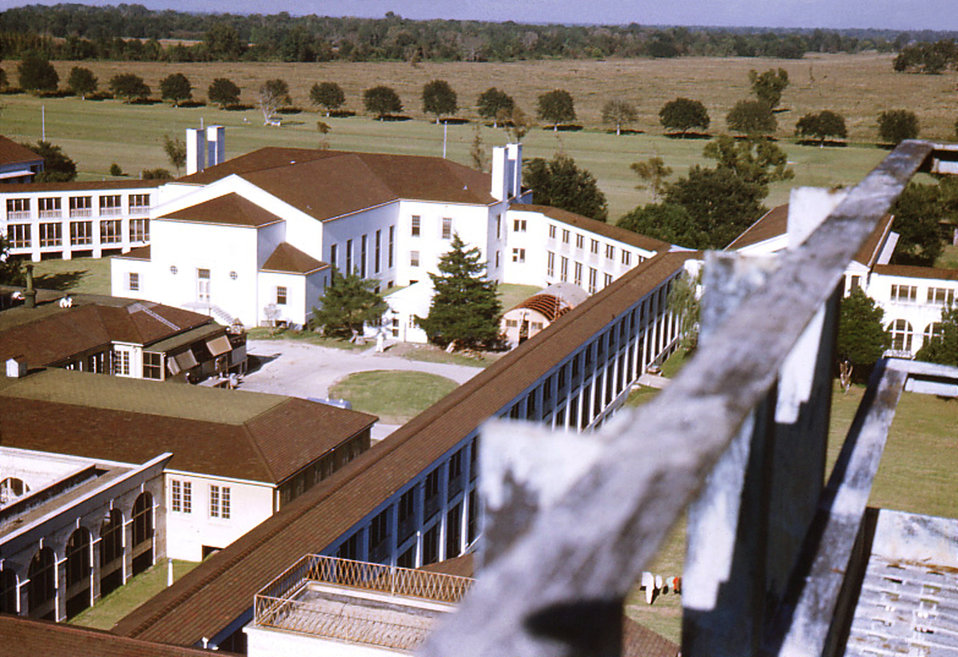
This aerial view depicted the amusement hall on the grounds of the historic Carville Leprosarium, connected to the North and South wings by a covered, enclosed walkway, which protected patients and staff from the elements. The hospital was a self-contained compound with its own power plant, storehouse, patient treatment centers, which included a dental office, food-processing facilities, i.e., a cafeteria, and its own cemetery.